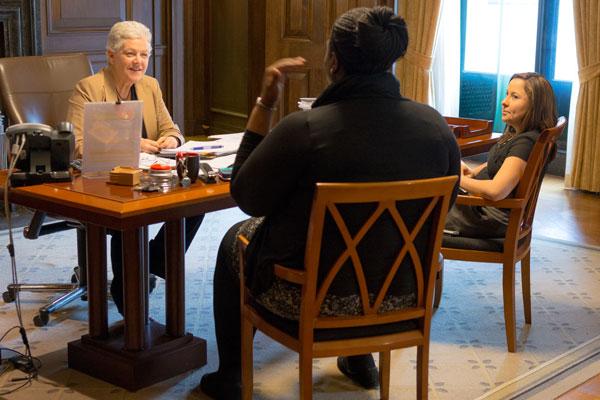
Day in the Life - April 4, 2014

11:47 am - As part of her mission to broaden the conversation about public health and environmental protection, McCarthy has expanded the agency’s Office of Public Engagement.
Here she meets with Rosemary Enobakhare and Amanda Aguirre to discuss ongoing outreach efforts. (6/12)